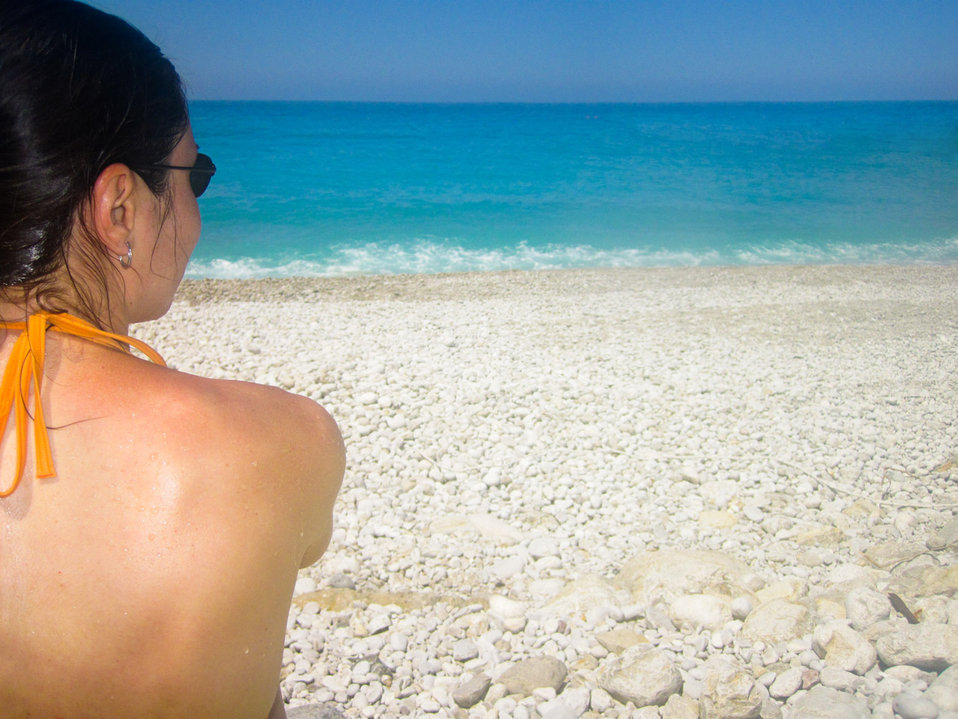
Woman beach and sea

Young woman at the beach looking at blue sea.